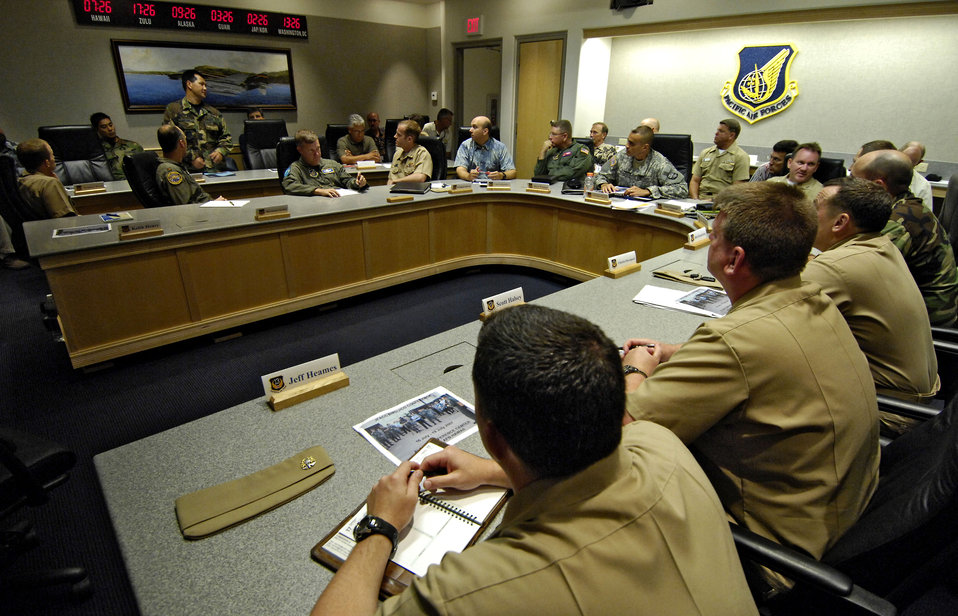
Missile defense experts meet in Hawaii

Members of the Joint Interface Control Officer Conference discuss standardized guidance and procedures July 16, 2007 at Hickam Air Force Base, Hawaii. The conference is a four-day event involving joint interface control officers and ballistic missile defense experts from across the Pacific Command to focus on integrating BMD assets and capabilities to form a stronger alliance and interoperability for the future.